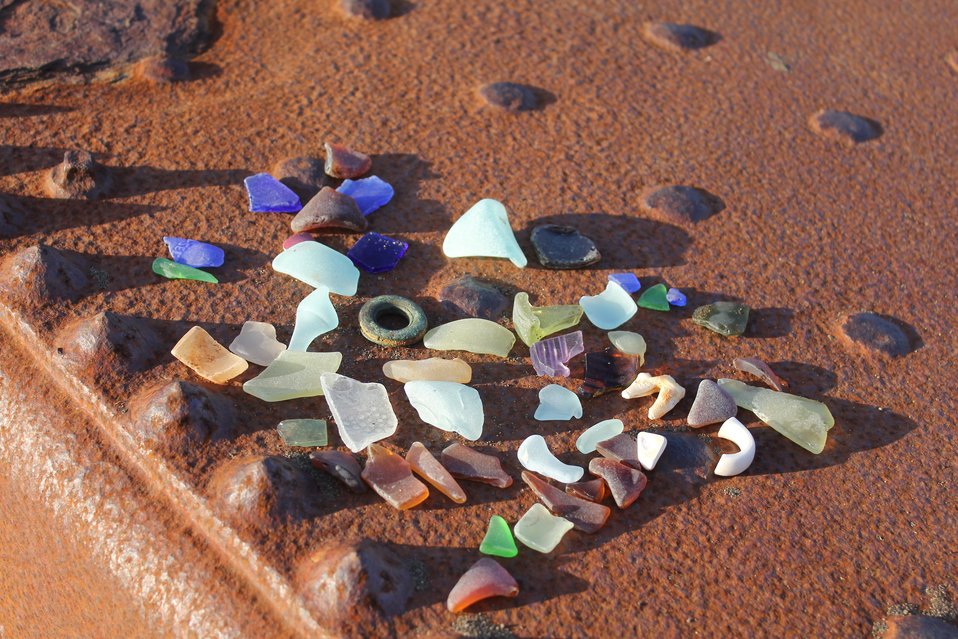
The history of St. Michael can be discerned from these glass remnants. Russian, American, Chinese glass and porcelain fragments.